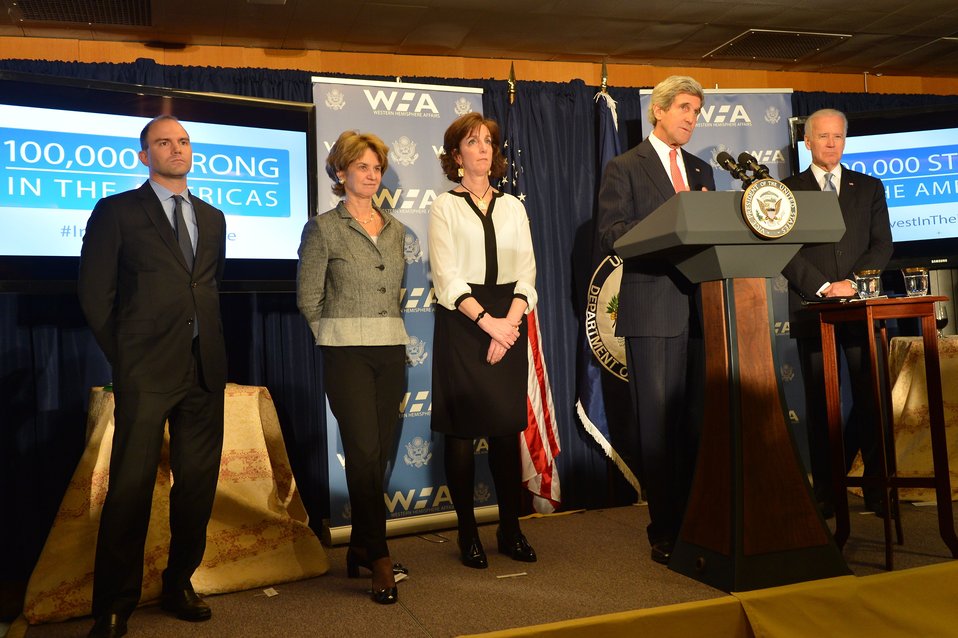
Secretary Kerry Delivers Remarks at the Launch of the 100,000 Strong in the Americas Partnership

Flanked by Deputy National Security Advisor Ben Rhodes, Special Advisor Kathleen Kennedy Townsend, Assistant Secretary for Western Hemisphere Affairs Roberta Jacobson, and Vice President Joe Biden, U.S. Secretary of State John Kerry delivers remarks at the launch of the 100,000 Strong in the Americas Partnership at the U.S. Department of State in Washington, D.C., on January 17, 2014.